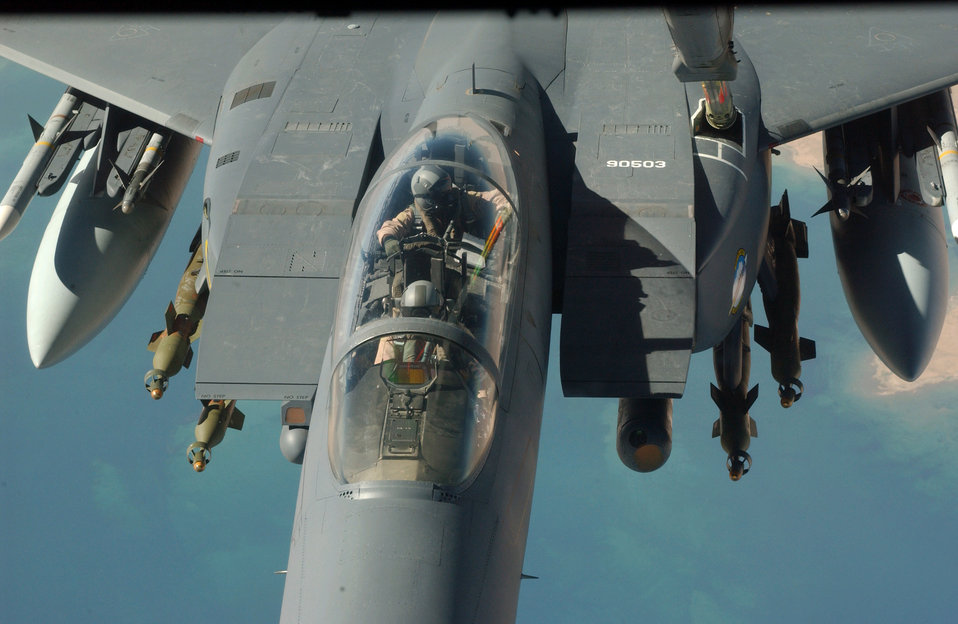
Iraqi Eagle

OVER IRAQ -- An F-15 Strike Eagle prepares to refuel during a mission supporting Operation Iraqi Freedom on July 4.